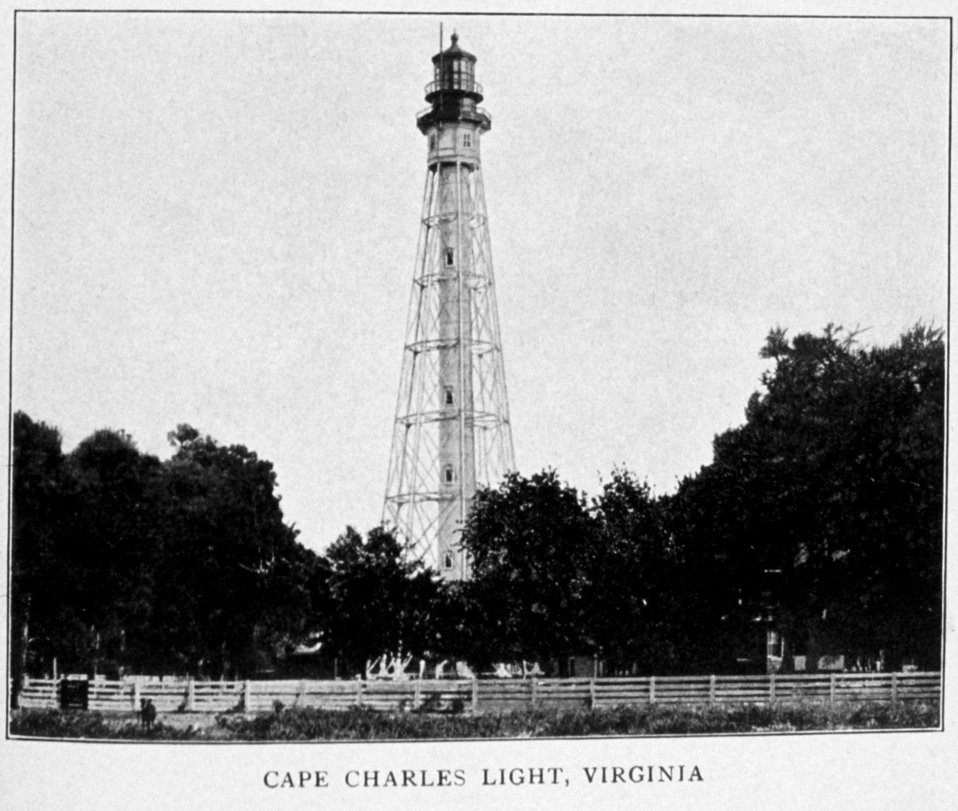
Cape Charles Light, Virginia. In: 'Lighthouses and Lightships of the United States' by George R. Putnam, p. 14, 1917. Houghton Mifflin and Company, Boston. Library Call No. 527.7 P98.